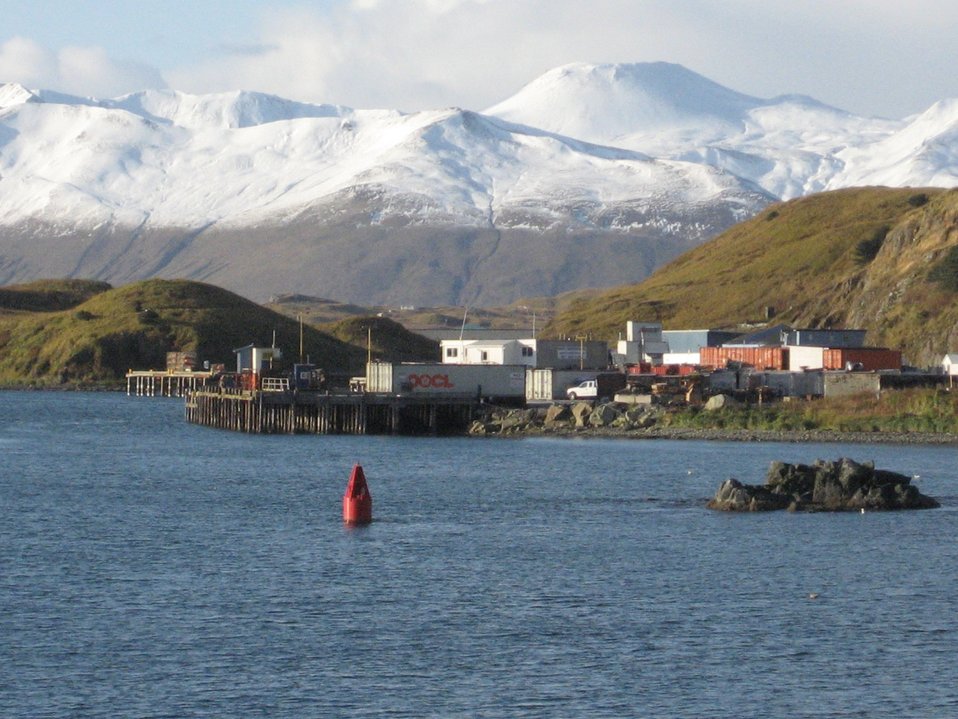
The Coastal Transportation piers at Dutch Harbor